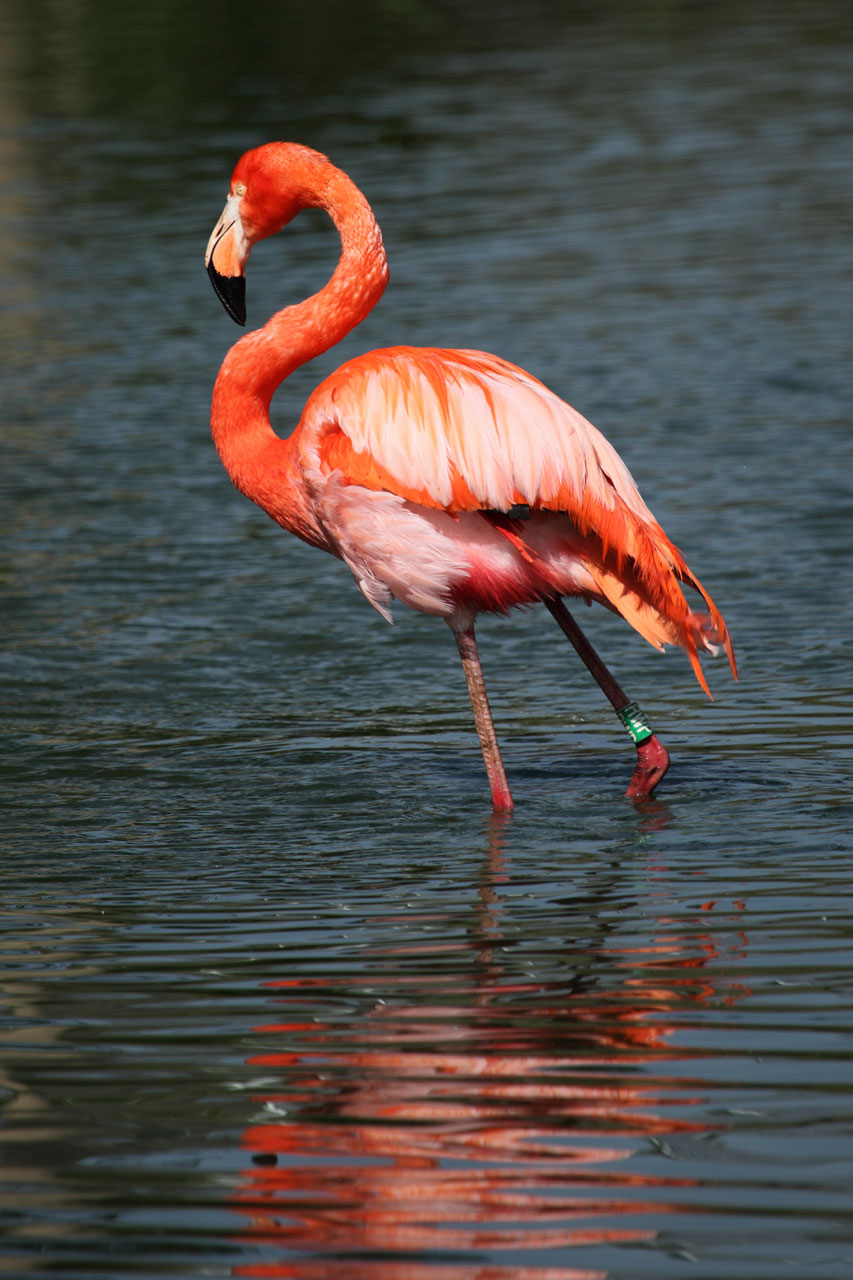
Red flamingo

Flamingo standing in water.